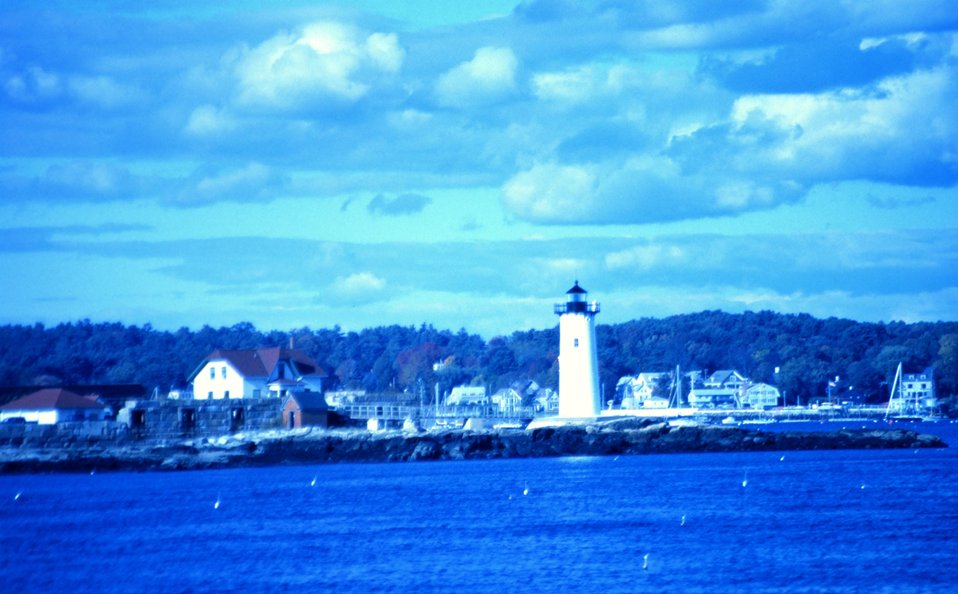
A view of the lighthouse guarding the harbor entrance.